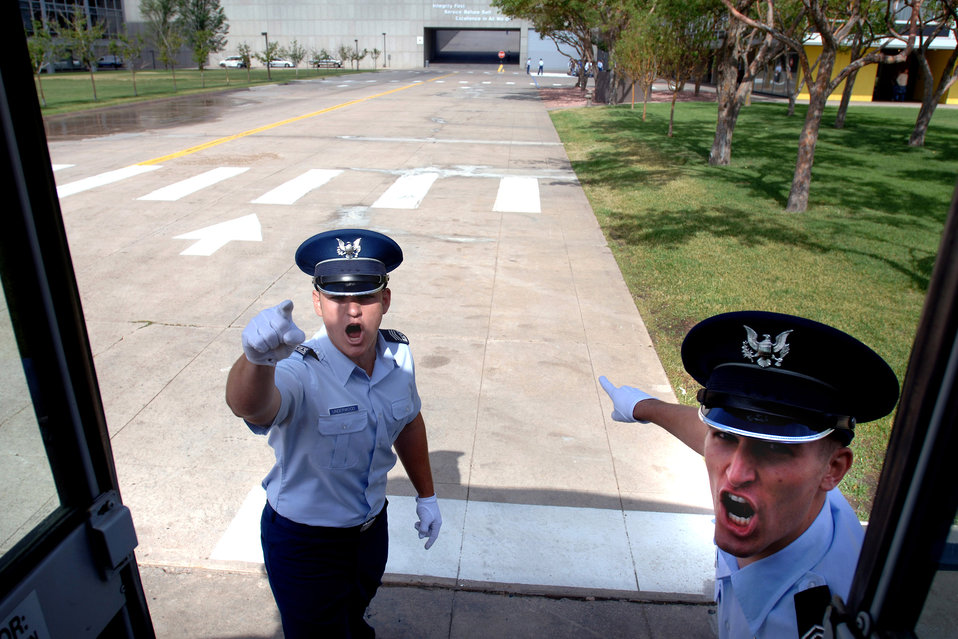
Welcome to the Air Force

Basic cadet trainees meet inspiring upper classmen as they exit the bus to begin inprocessing as the Class of 2011 June 28 at the U.S. Air Force Academy in Colorado. The 1,304 members of the U.S. Air Force Academy's Class of 2011 arrived to inprocess and begin basic cadet training here.